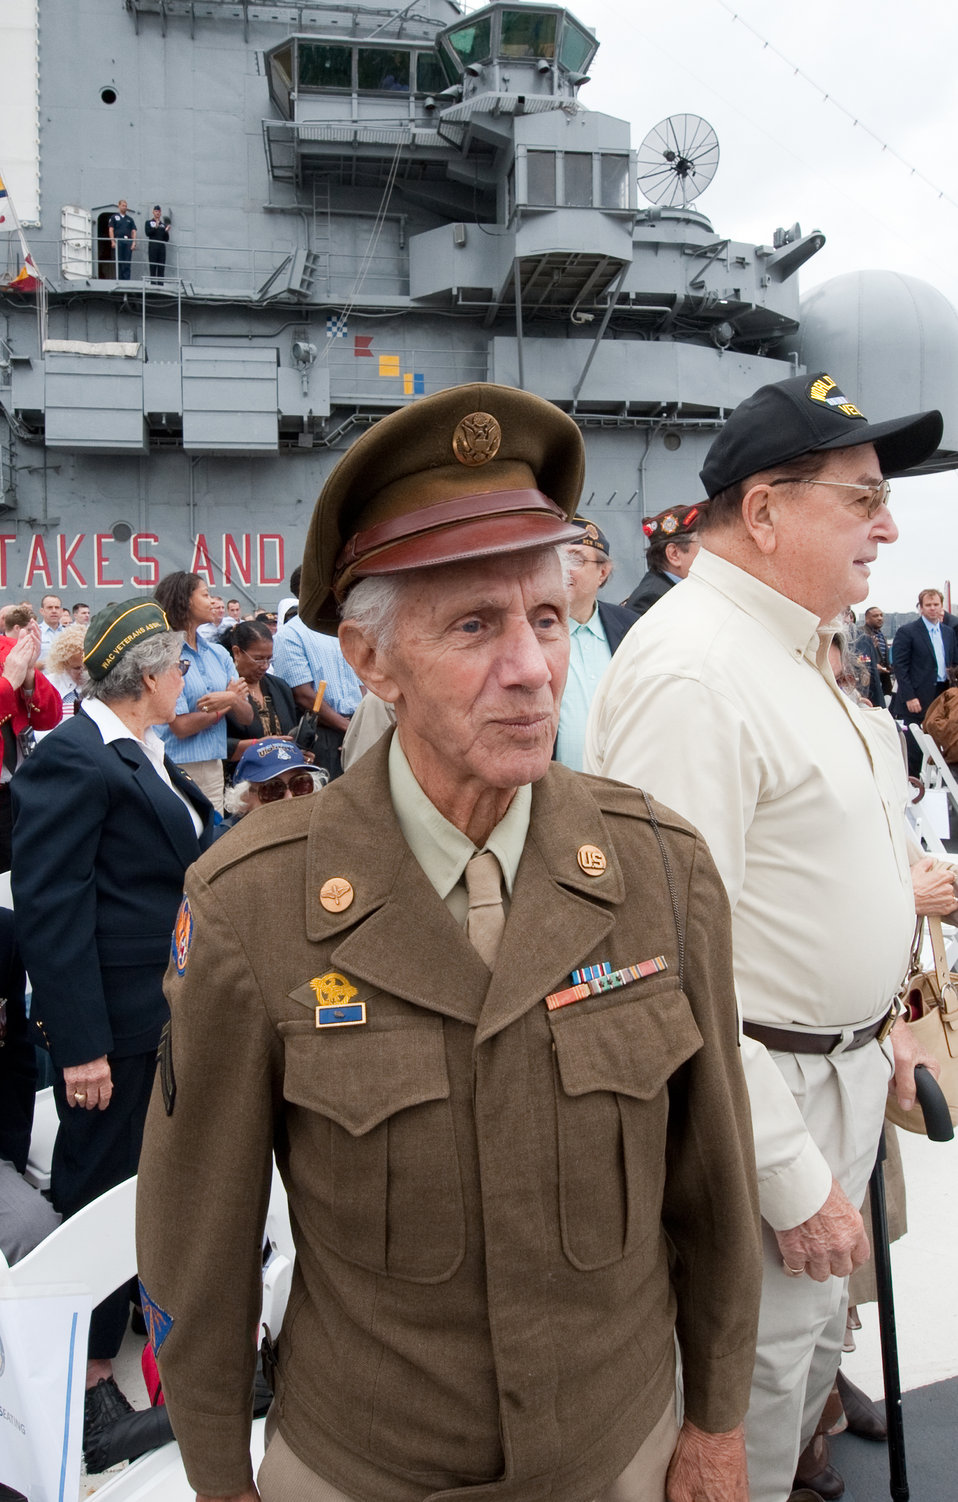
Air Force Week New York City Proclamation Ceremony

Frank Milano (brown uniform) stands while the during the departure of the Official Party of the Air Force Week New York City proclamation ceremony at the USS Intrepid on Aug. 24, 2010. Mr. Milano of New York City, was a Corporal in the Army Air Force, stationed in Europe with the 9th Air Force during World War II. The team is from Bolling Air Force Base. The event at the Intrepid Sea, Air & Space Museum was highlighted by a six-ship flyover by the USAF Thunderbirds. The Honorable Michael Donley, Secretary of the Air Force attended, along with General Raymond Johns, Commander of Air Mobility Command. The Police Commissioner of the City of New York, the Honorable Raymond Kelly, represented NYC. Mr. Greg Kelly of